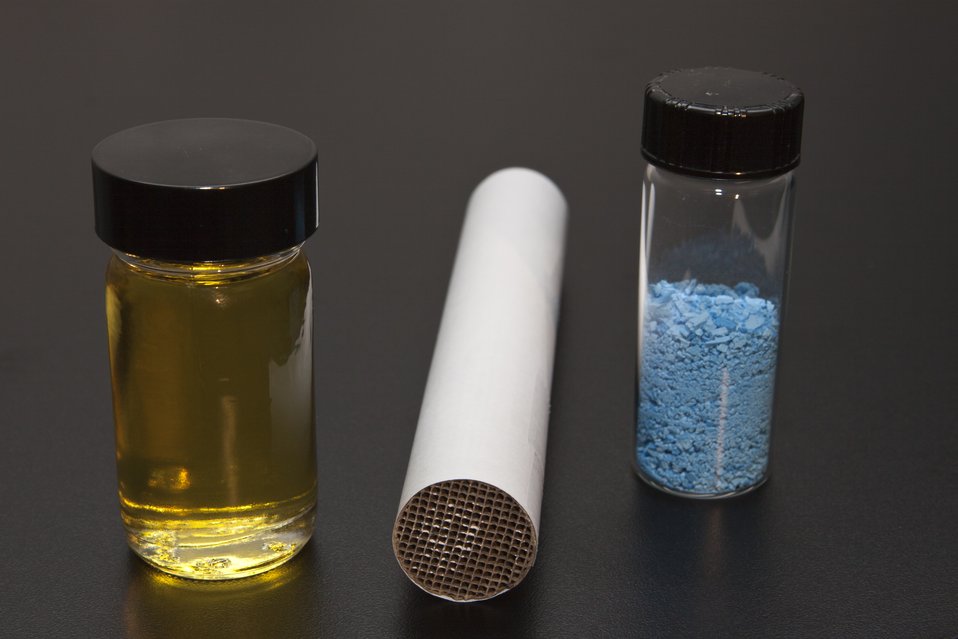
2011 R & D 100 AWARD WINNING PROCHEM CATALYST DEVELOPED BY NATIONAL ENERGY TECHNOLOGY LABORATORY IN MORGANTOWN, WV.